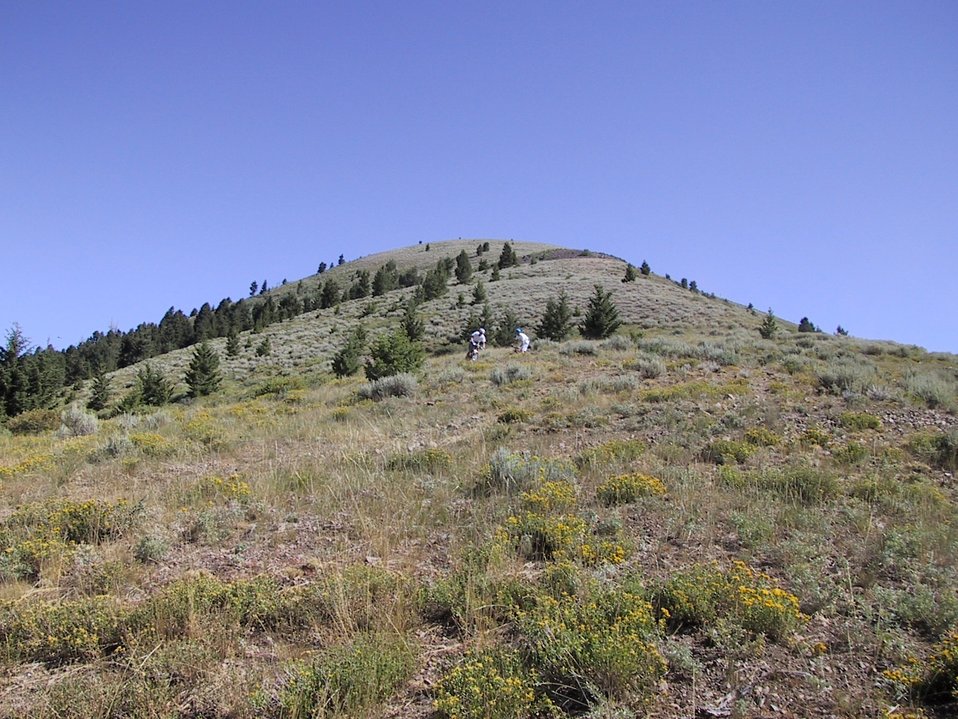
Bikers Blaine County Trails Shoshone Field Office USRD Upper Snake River District